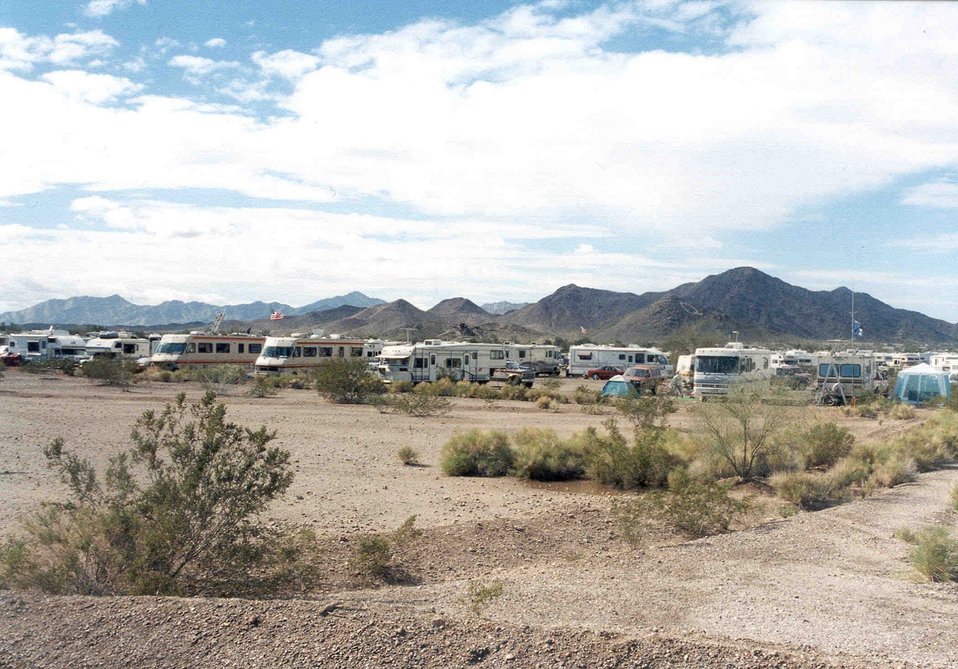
Winter visitors camping at the La Posa Long Term Visitor Area.